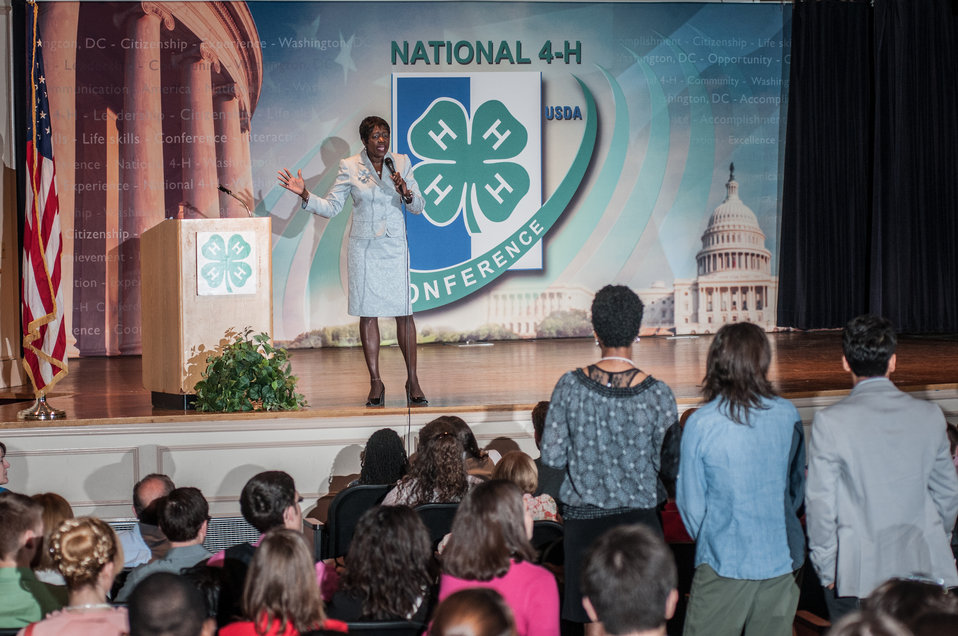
U.S. Department of Agriculture (USDA) Departmental Management Office of Advocacy and Outreach Director Carolyn Parker provided opening remarks to approximately 300 youth members, Extension Educators and 4-H Adult Volunteers from across the nation, as well as U.S. Territories at the 2013 National 4-H Conference, on Monday, April 8, 2013 in Chevy Chase, MD. National Institute of Food and Agriculture Director Dr. Sonny Ramaswamy provide additional remarks and Secretary Tom Vilsack will deliver the keynote address. The youth delegates are in grades 10-12 (15-19 years old). The purpose of the conference is to 1) engage 4-H youth in personal development experiences that will increase knowledge, resources, and skills; 2) discuss topics affecting youth and 4-H programming nationwide; and 3) empower and mobilize 4-H youth to create positive social change in their communities in a meaningful and genuine way. The conference also reinforces the rich history of 4-H and its valuable tie to USDA, Cooperative Extension and the Land-Grant University System.